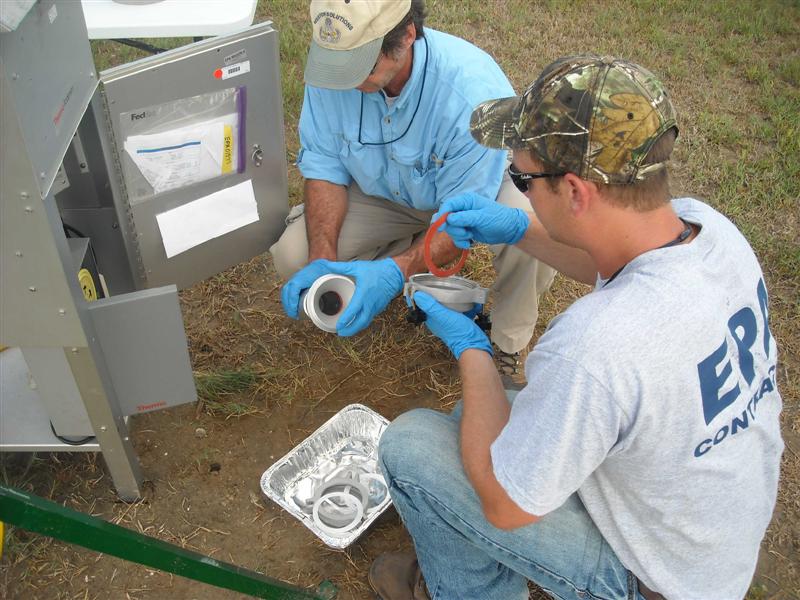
EPA air sampling assembly

Sampling assembly for PUF high volume air sampler in Louisiana